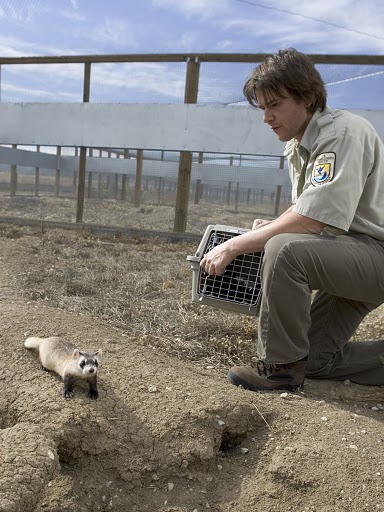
Black-footed Ferret

Ryan Hagerty with a black-footed ferret at the National Black-footed Ferret Conservation Center in northern Colorado.